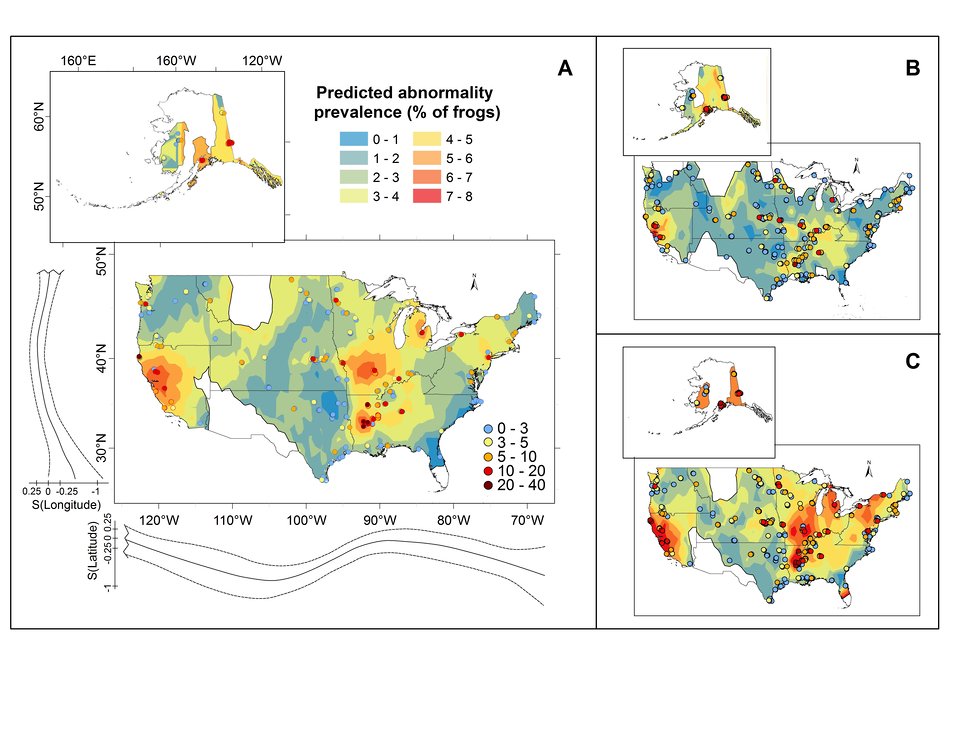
Figure2

Geographic distribution of amphibian abnormalities with hotspot clusters. Warmer colors represent higher predicted abnormality prevalence (percentage of frogs abnormal). Sample sites (N=462) from the 10-year survey are shown as circles. Picture (A) shows sites color coded and surface interpolated using the mean abnormality prevalence at each site. (B) Shows site color coding and surface interpolation using the minimum values at each site. (C) Shows site color coding and surface interpolation using the maximum values at each site.